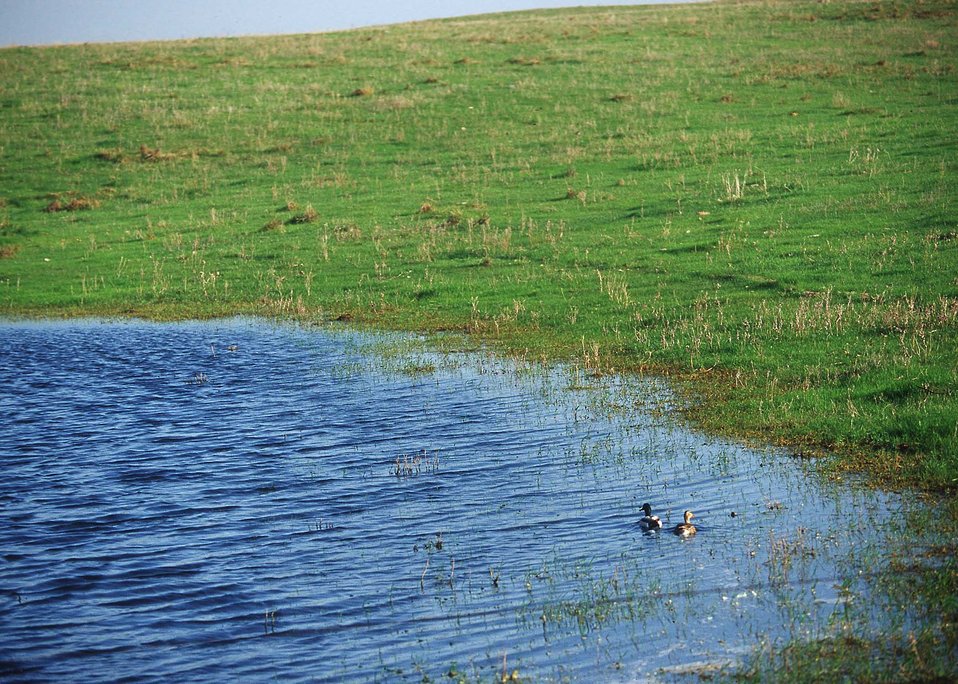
Mallard Ducks along the shore of a prairie pothole wetland in northeastern South Dakota.